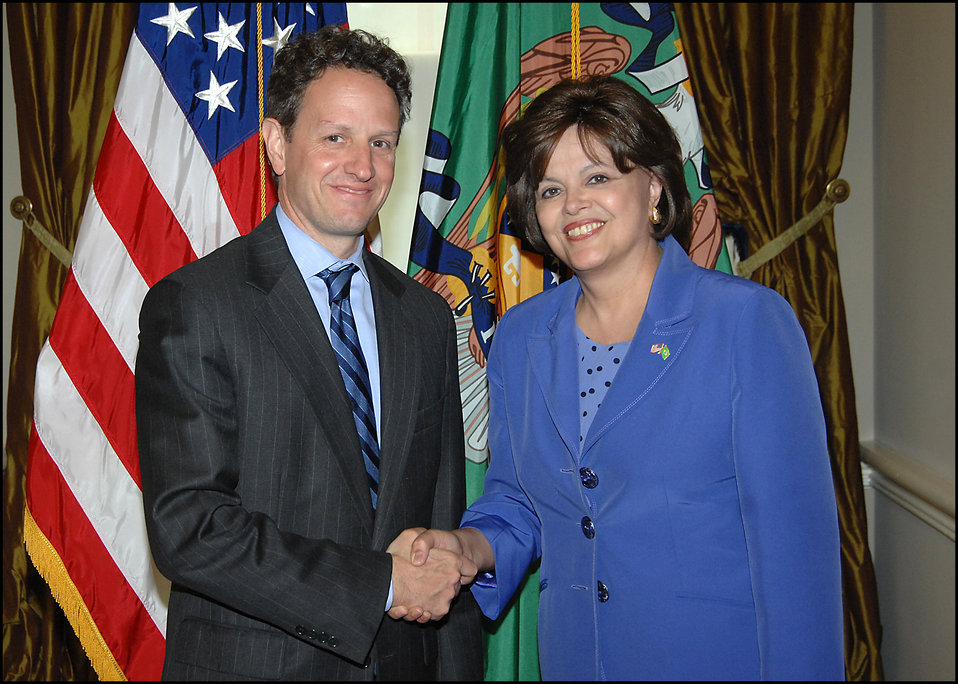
Brazilian Minister of the Presidency Dilma Rousseff

On July 21, 2009, Secretary Geithner meet with Brazilian Minister of the Presidency Dilma Rousseff.